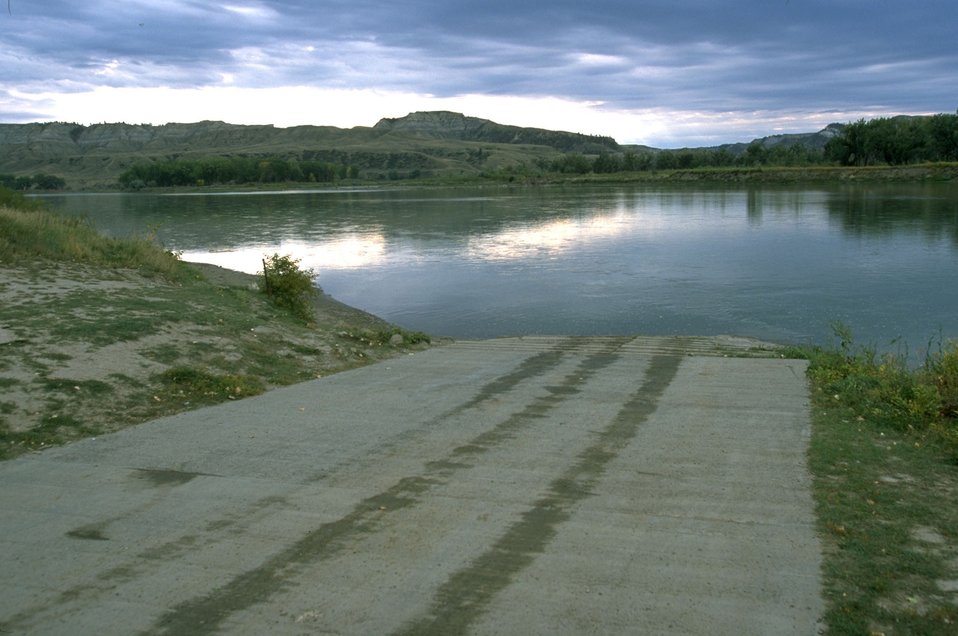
Sign at Judith Landing